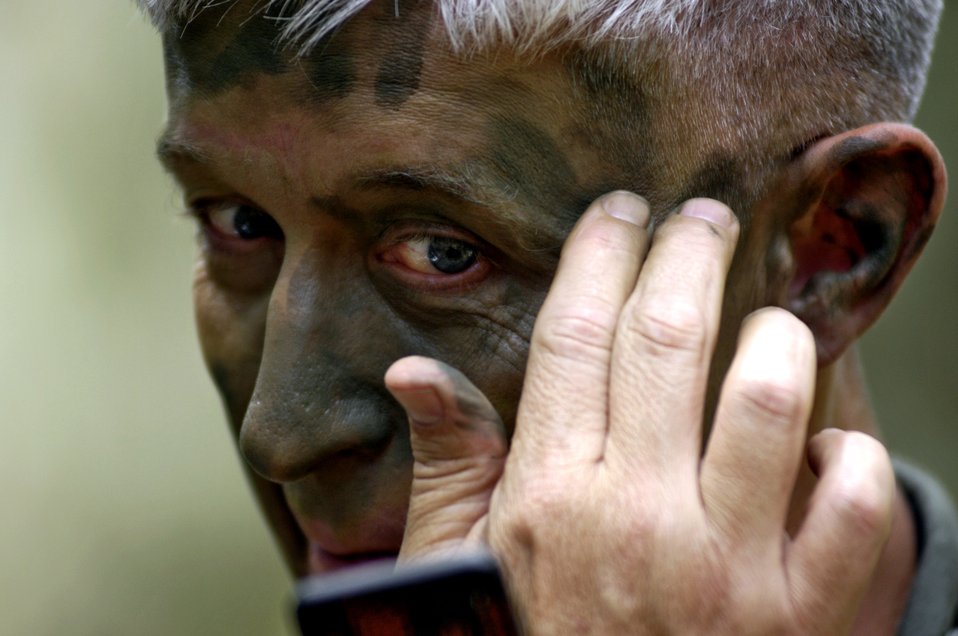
Survival refresher course

Lt. Col. Jimmy Barrow applies grease paint to camouflage his face during a ground survival refresher course at Schofield Barracks, Hawaii, on Thursday, May 4, 2006. The course provides realistic training for aircrew members and concentrates on the principles, techniques and skills necessary to survive in any environment.